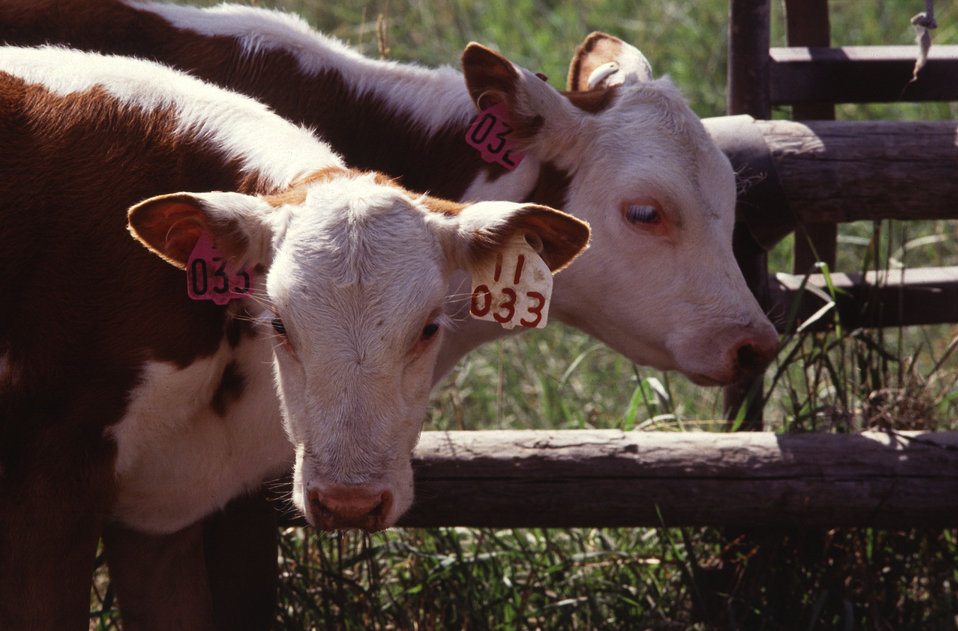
Cattle graze inside a fenced in area.